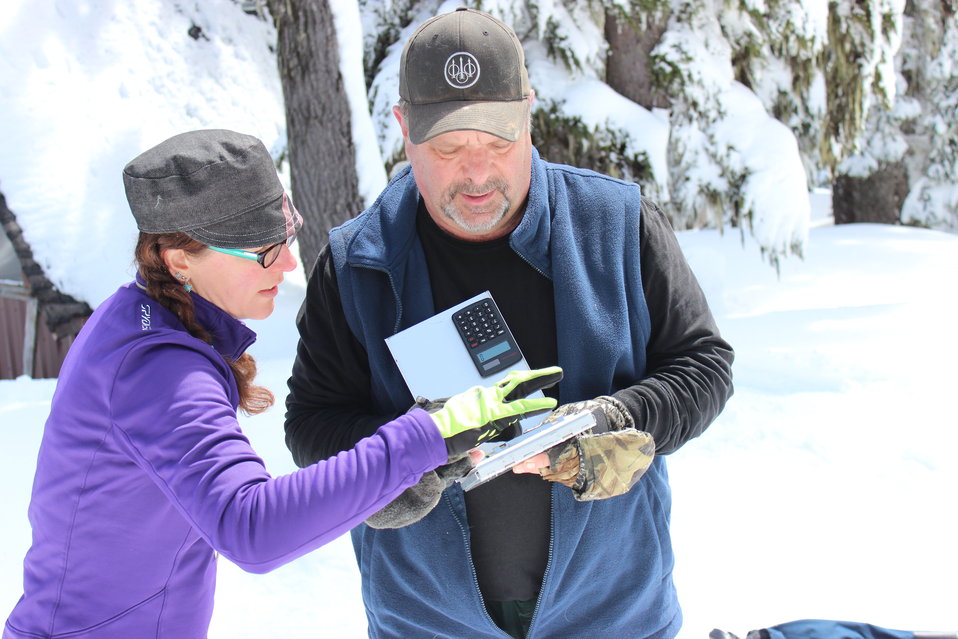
13927994328 bfee40eda4 o

U.S. Department of Agriculture (USDA) Natural Resource Conservation Service (NRCS) Oregon Hydrologist Julie Koeberle helps USDA NRCS Soil Scientist Thor Thorson calculate current water content in snow.